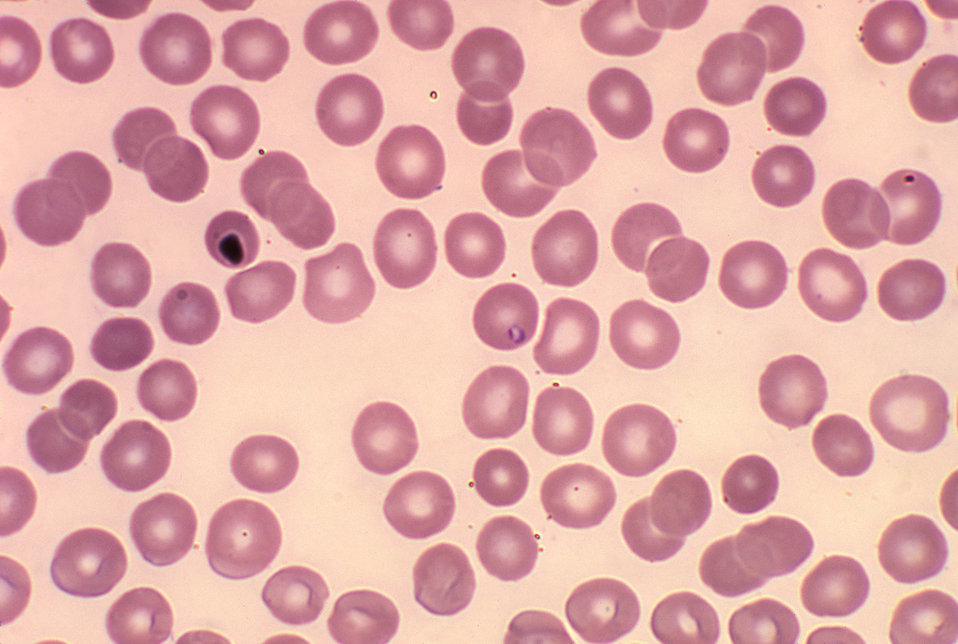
Babesia microti in blood smear. Giemsa stain. Parasite.